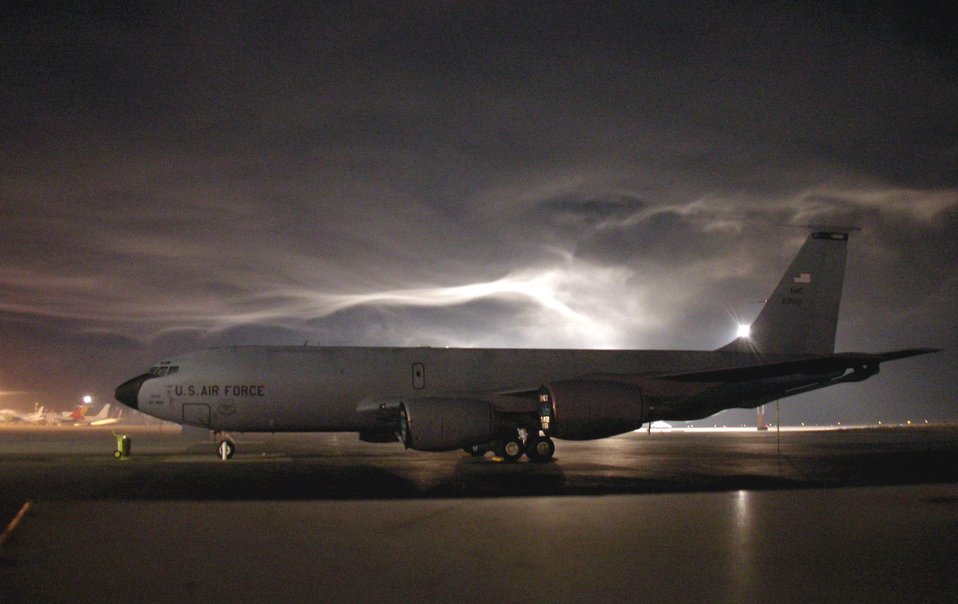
In any weather

A KC-135 Stratotanker sits on the flightline at Manas Air Base, Kyrgyzstan, Thursday, Feb. 23, 2006. Ground crews will de-ice the tanker before it takes off on a refueling mission.